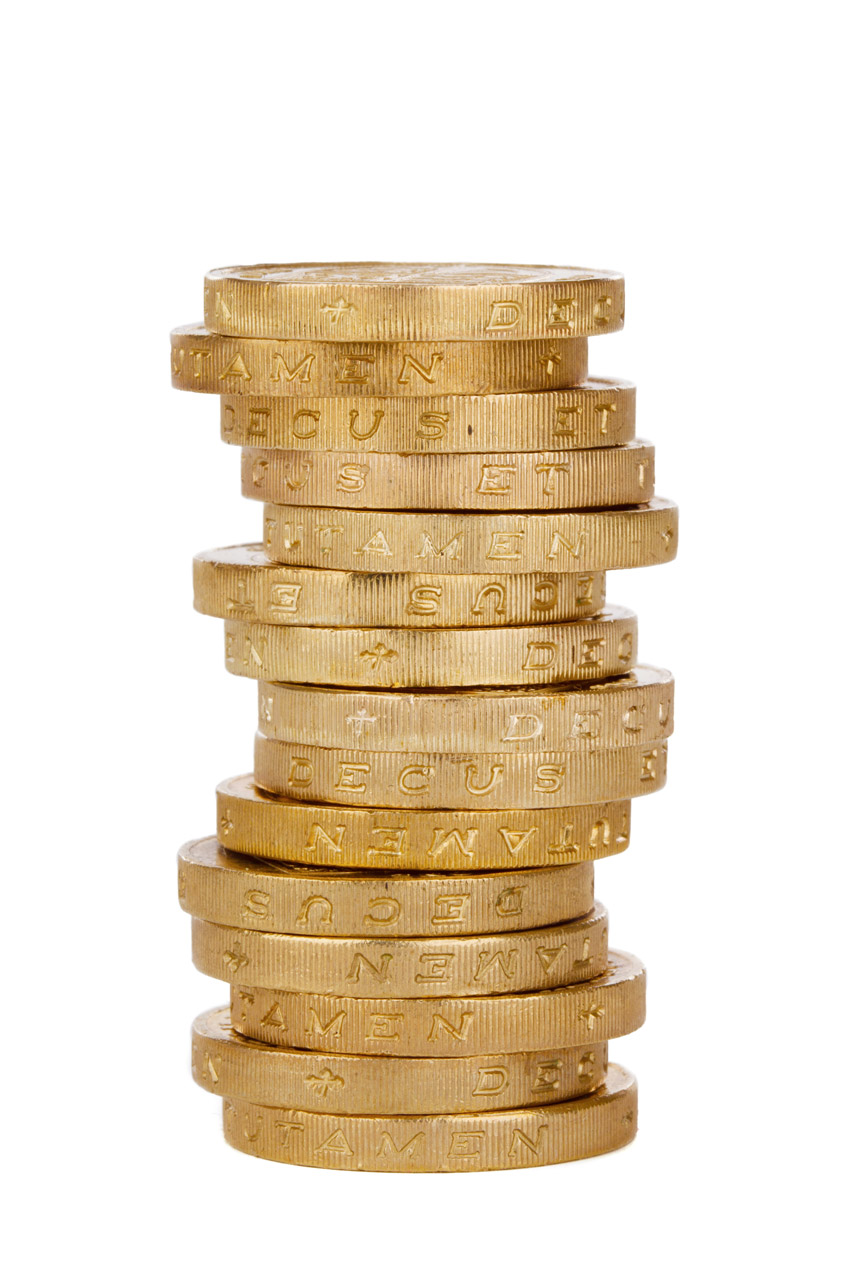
Gold coin stack

Stack of golden coins isolated on white background.